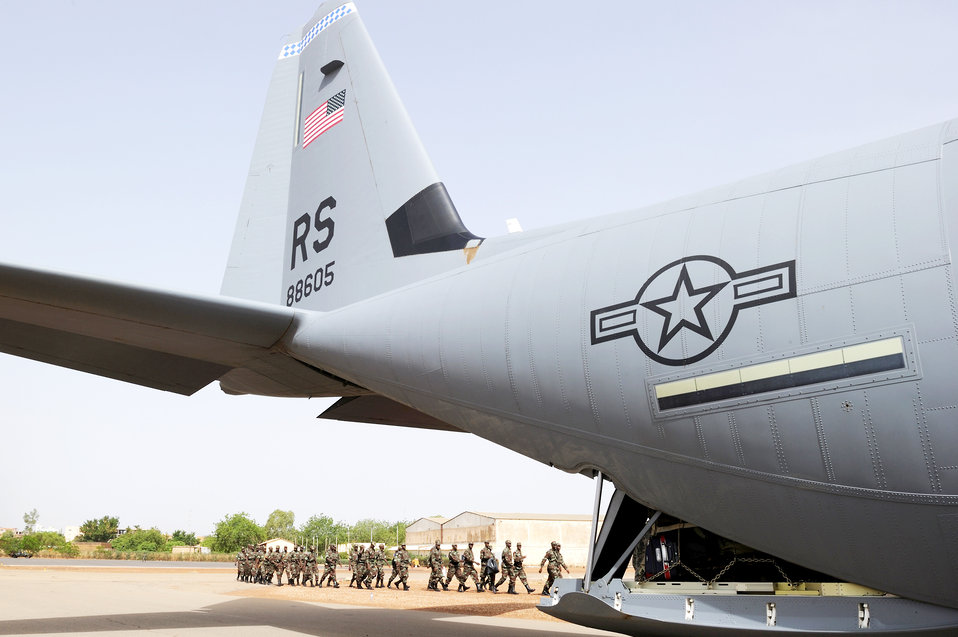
Airmen support Air Forces Africa in exercise

Burkinabe army soldiers march toward a C-130J Super Hercules to begin their deployment to Mali in support of Exercise Flintlock 10 May 1, 2010, in Ouagadougou, Burkina Faso. The C-130J is deployed from Ramstein Air Base, Germany.